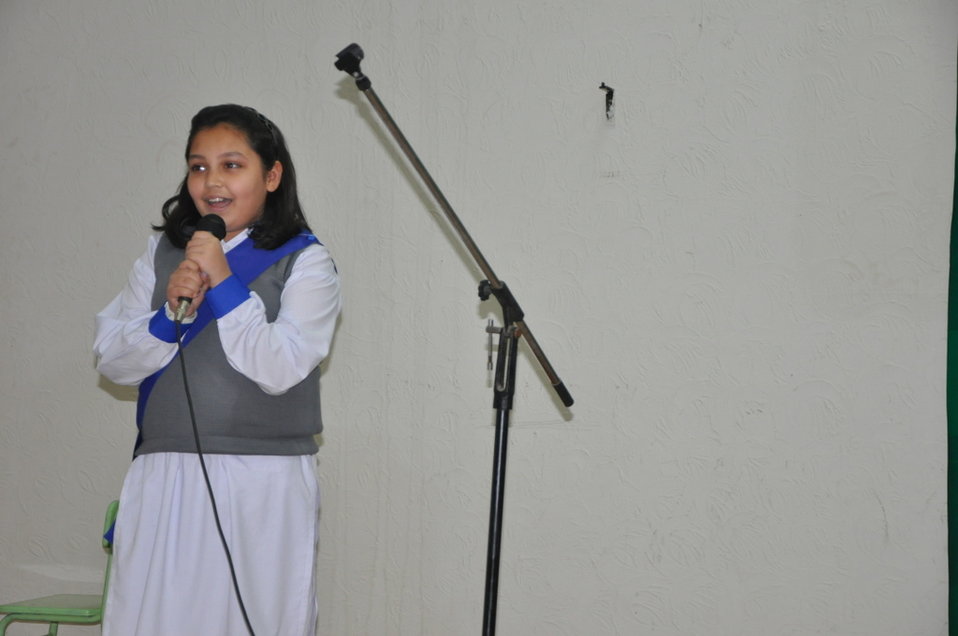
USAID Power Distribution Program-Energy Conservation Seminar Beaconhouse School System, Multan

Multan, January 21, 2013- During the seminar, A student singing a song: 'bari mahngi bijli g..'